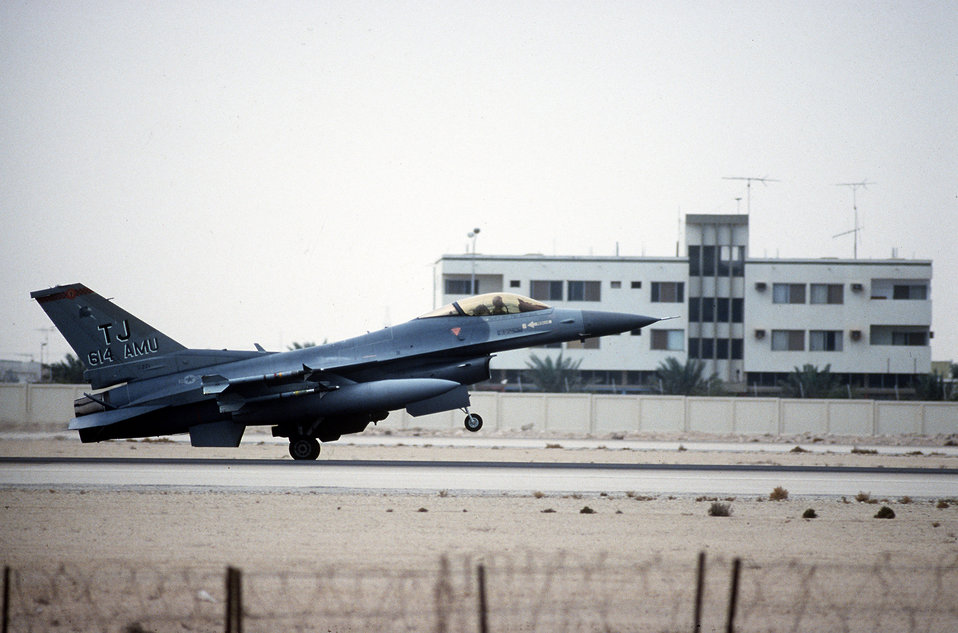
F-16C Fighting Falcon

1990's -- A 614th Tactical Fighter Squadron F-16C Fighting Falcon aircraft lands following a mission on the first daylight strike against Iraqi targets during Operation Desert Storm. The aircraft is armed with AIM-9 Sidewinder missiles.